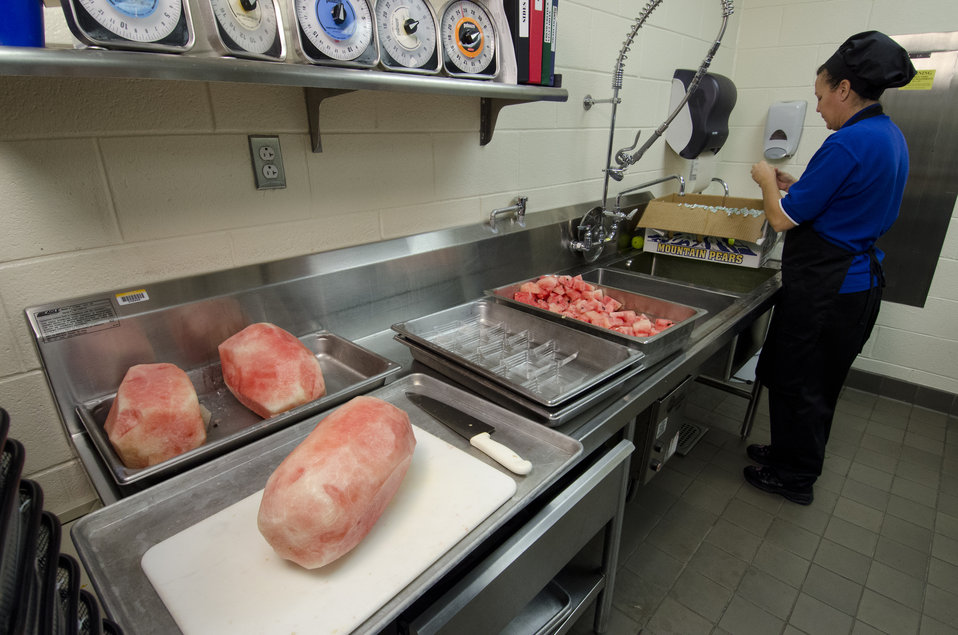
School lunch staff and students enjoy the new school lunch menu created to meet the new standards at the Yorkshire Elementary School in Manassas, VA on Friday, Sept. 7, 2012.